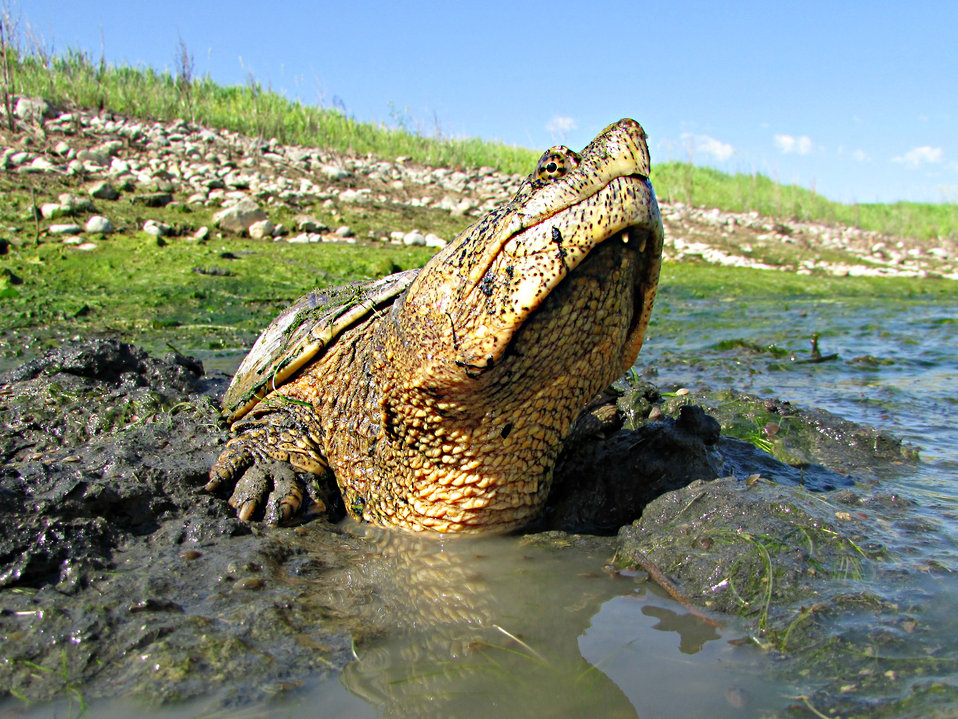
Bowser

As we were draining ponds this morning this snapper showed up and was an excellent model. We estimate there are atleast 75 of them that call our earth ponds home.